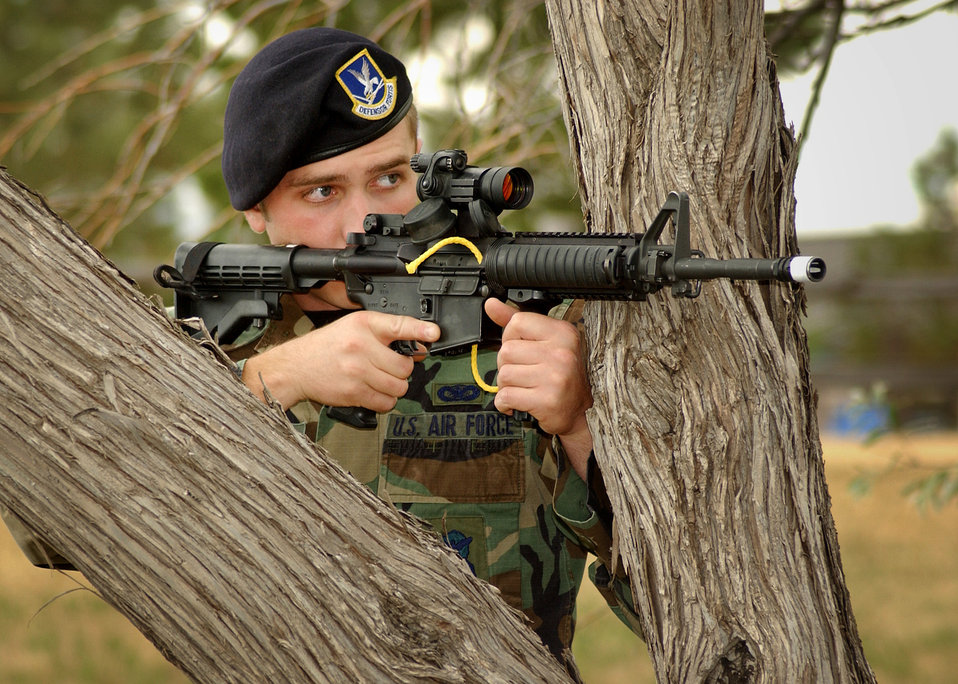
Taking position

ELLSWORTH AIR FORCE BASE, S.D. -- Airman Matthew Gillette positions himself behind a tree after helping to secure the perimeter around a base housing area during an exercise. The 28th Security Forces Squadron Airmen here received training from U.S. Marshals recently in a variety of subjects.